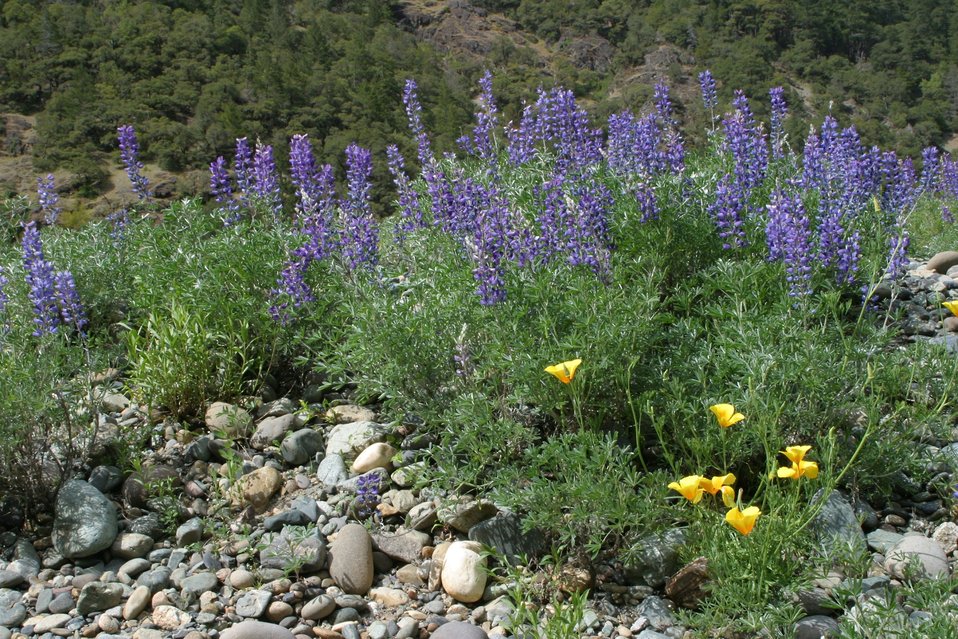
Wild section of the Rogue River from Grave Creek to Foster Bar. 3100 cfs at Grants Pass and 5300 at Agness.